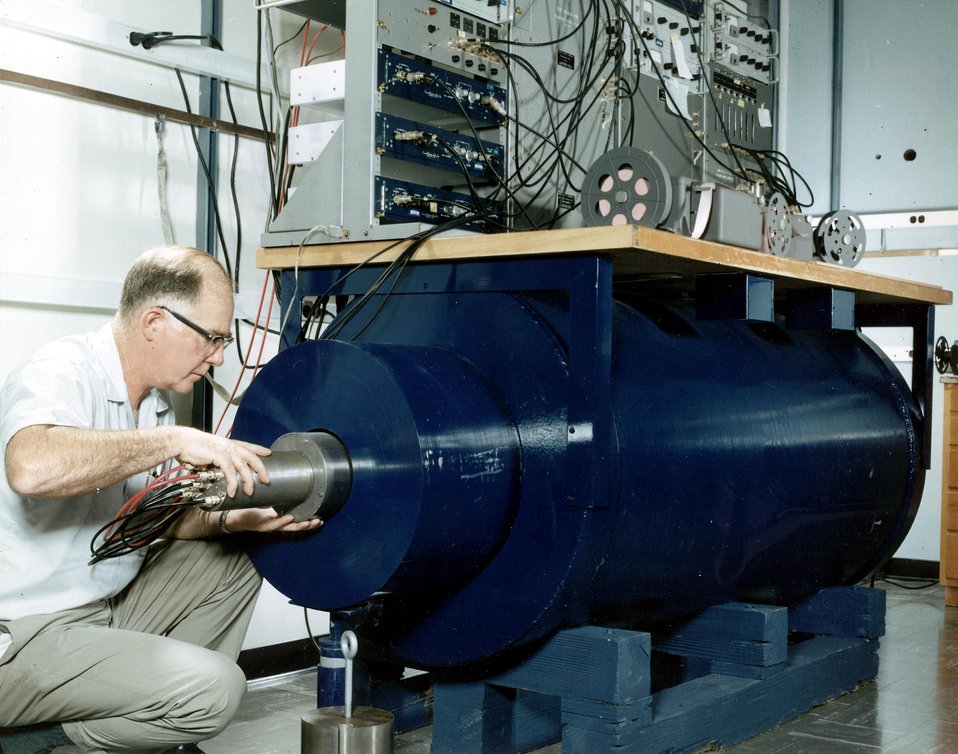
The low level counter used in the solar neutrino experiment is being
placed in the shield. In this experiment neutrinos which result from
nuclear reactions in the sun's core are detected by measuring the
radioactive argon nuclides that they produce in a target.